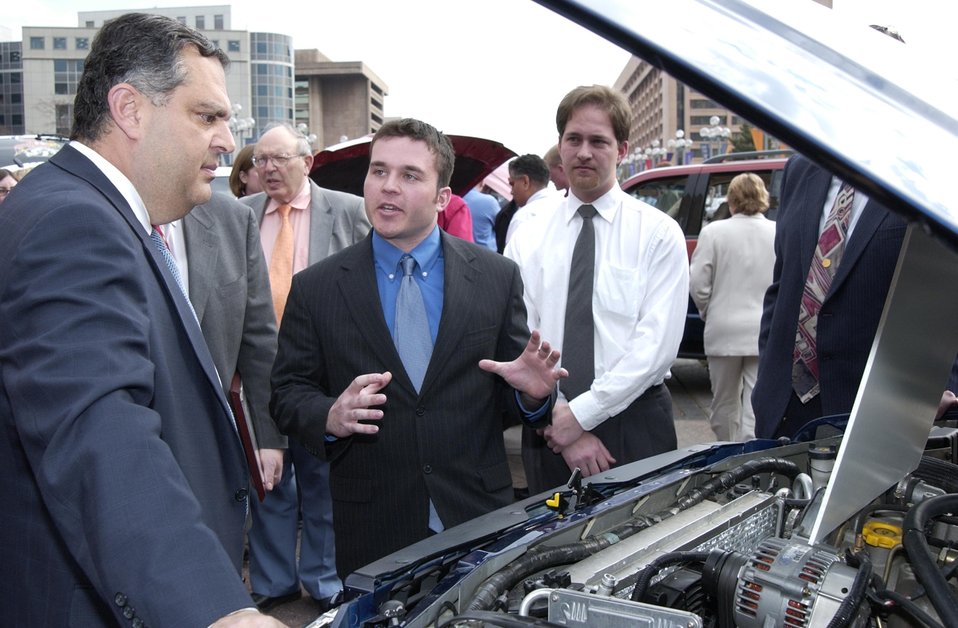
WEST VIRGINIA UNIVERSITY STUDENT BRIEFING SECRETARY ABRAHAM ON RE-ENGINEERED SUV.

ON MARCH 24, 2004, SECRETARY OF ENERGY ABRAHAM AND THE FORD MOTOR COMPANY HOSTED SEVEN STUDENT DESIGNED ENERGY EFFICIENT SPORT UTILITY VEHICLES (SUVS) PARKED OUTSIDE OF DOE HEADQUARTERS IN WASHINGTON, DC. THE STUDENT TEAMS, PART OF THE FUTURE TRUCK 2004 ENGINEERING COMPETITION, RE-ENGINEERED FORD EXPLORERS TO ACHIEVE LOWER-EMISSIONS AND AT LEAST 25% HIGHER FUEL ECONOMY, WITHOUT SACRIFICING PERFORMANCE, UTILITY AND SAFETY. THE UNIVERSITIES THAT PARTICIPATED WERE OHIO STATE, PENN STATE, MARYLAND, TENNESSEE, WISCONSIN-MADISON, VIRGINIA TECH AND WEST VIRGINIA.